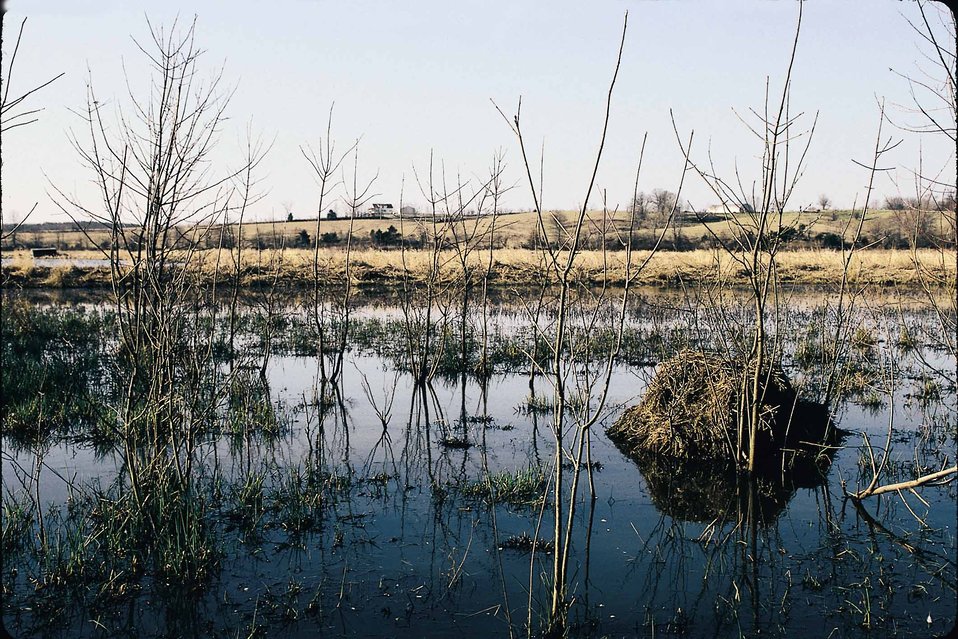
Habitat for ducks and geese and muskrats on a restored wetland in Van Buren County, Iowa.